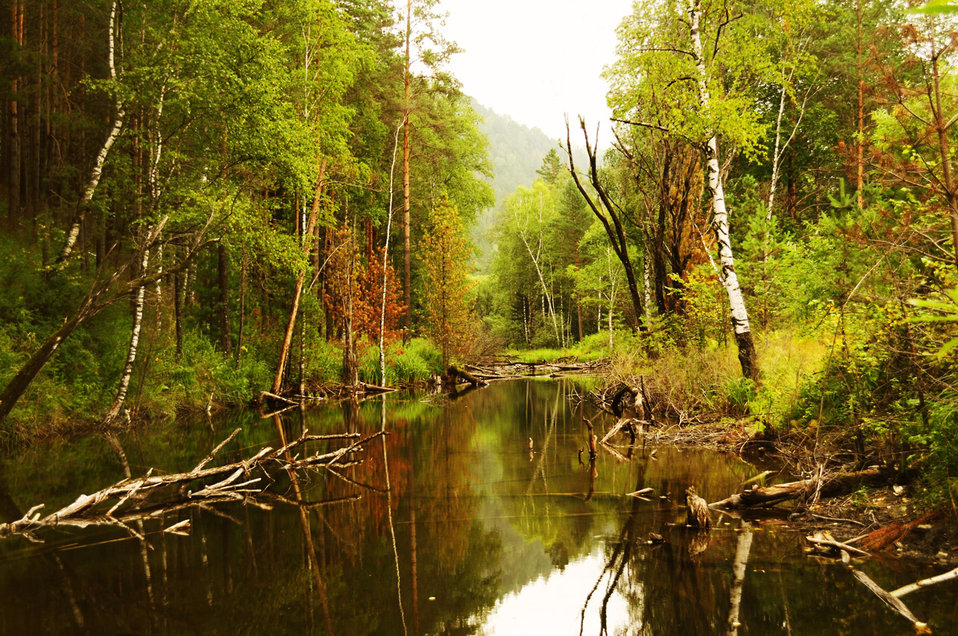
Trees over water

The trees reflected in calm water..